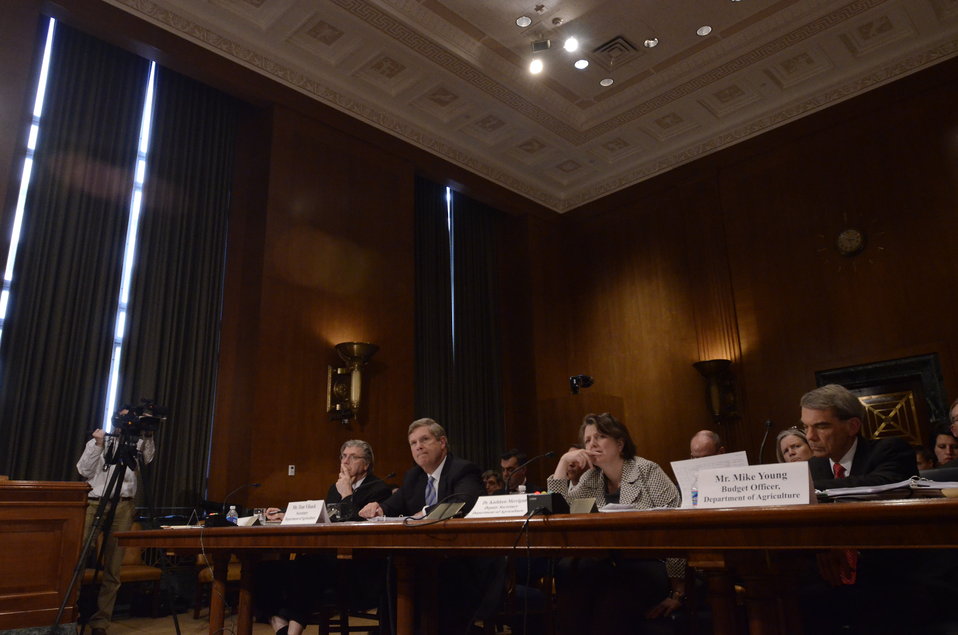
Agriculture Secretary Tom Vilsack and Agriculture Deputy Secretary Dr. Kathleen Merrigan testify before the Senate Agriculture Appropriations Committee on the fiscal year 2013 budget at the Dirksen Senate Office Building in Washington, D.C., on Thursday, March 29, 2012.